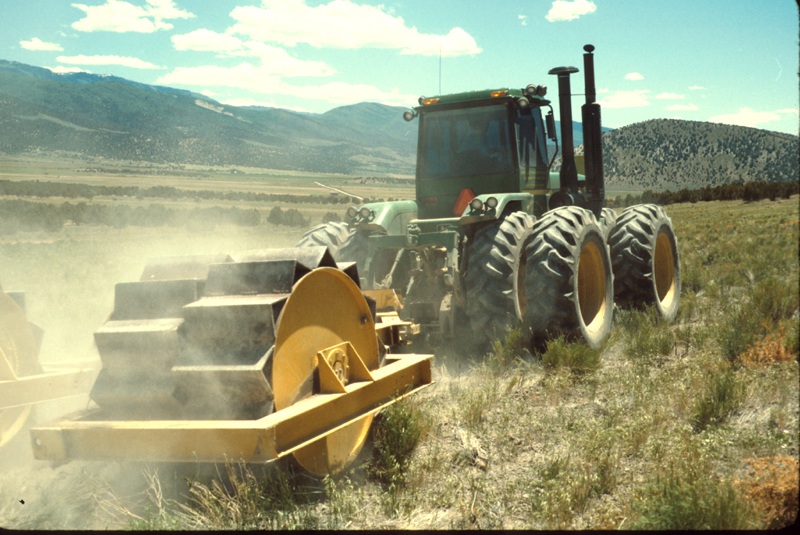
Tractor Plow Range Restoration Project Lower Snake River District